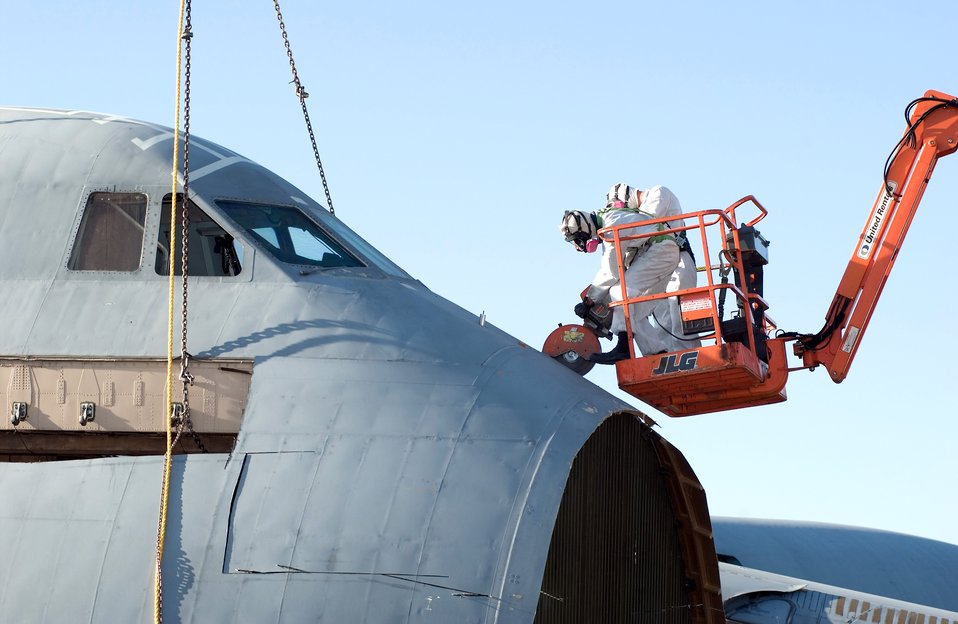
C-5 recovery efforts continue at Dover

Two recovery team members remove pieces of the C-5 Galaxy which crashed at Dover Air Force Base, Del., April 3.